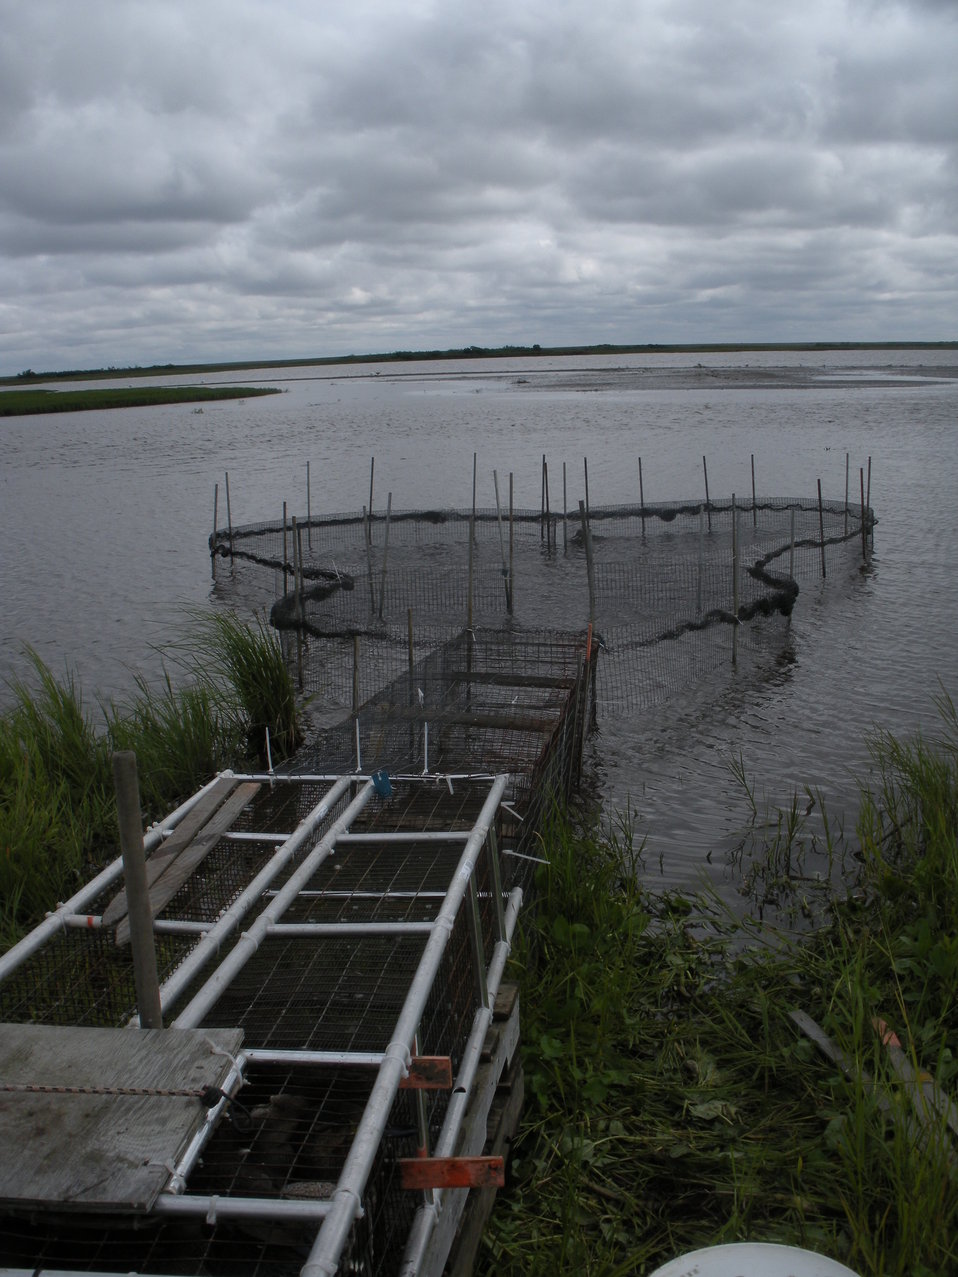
Swim-in Traps

Since 1990, Yukon Delta National Wildlife
Refuge (YDNWR) has participated in the
Northern Pintail and Mallard pre-season banding program which was established by the Division of Migratory Bird Management. Since then,
American Green-winged Teal has been considered a
secondary target. Swim-in traps are used to capture Northern Pintail, Mallard, and American Green-winged Teal. The birds age and sex are recorded and each bird is given a USFWS metal band. Assessment of the harvest distribution and derivation provide
baseline information that is used to update waterfowl management decisions (includeing harvest regulations) within the Pacific Flyway.

USFWS Yukon Delta NWR